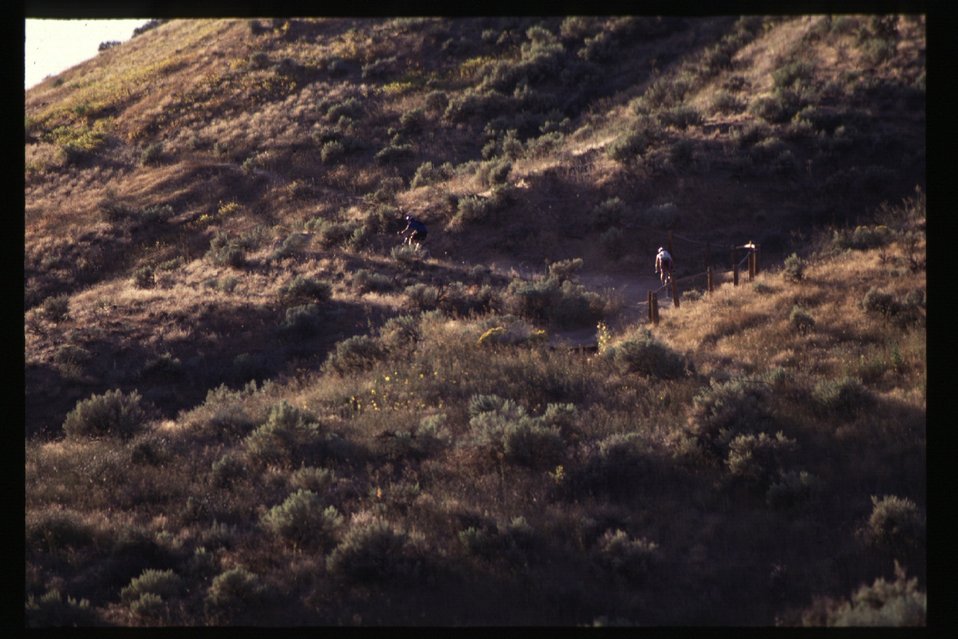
Bikers on Boise Foothills Boise Front bicyclists Four Rivers Field Office LSRD Lower Snake River District